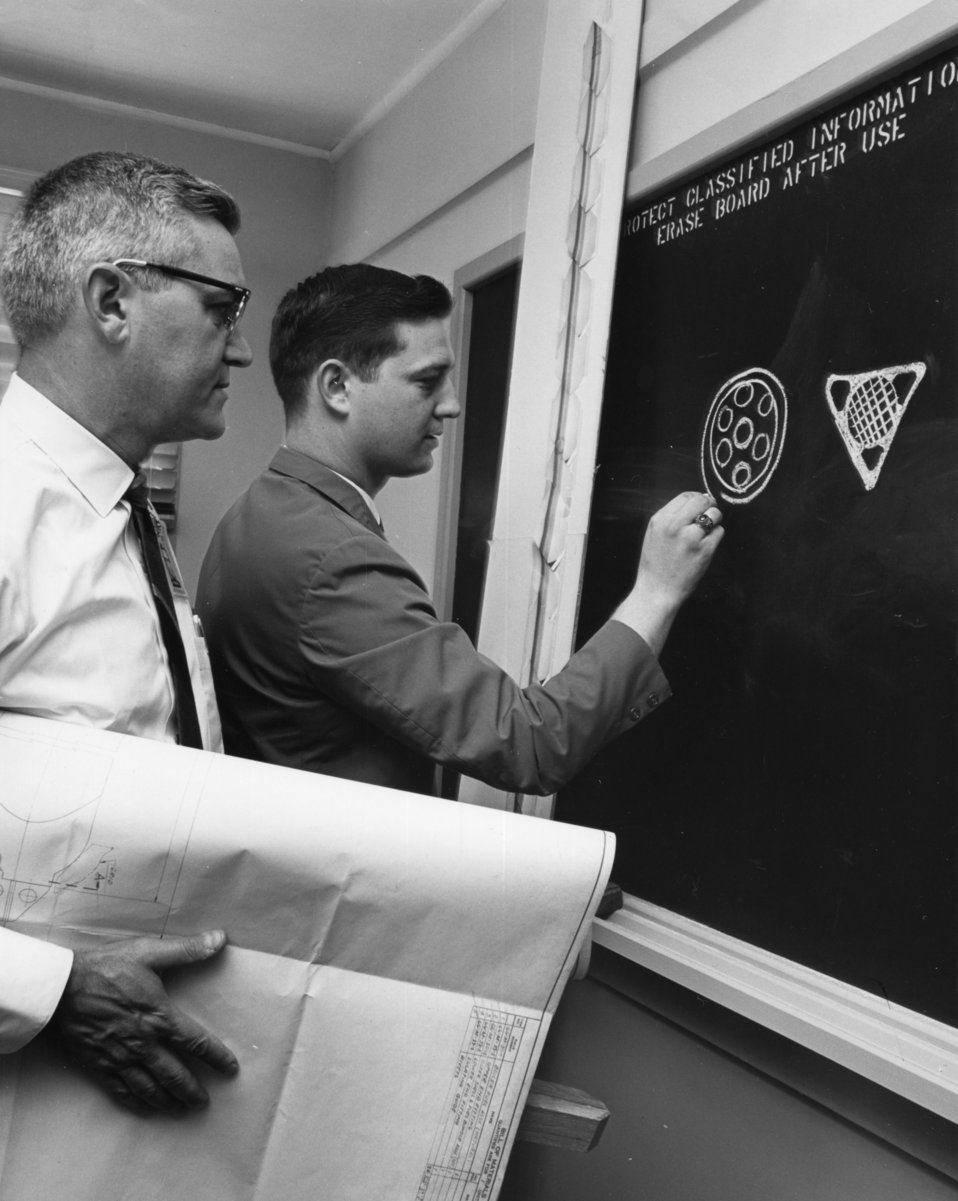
Chalkboard work on Reactor Fuel Element in Oak Ridge

66-0181-2 DOE photo Ed Westcott--- Connor Matthews, B.S. Metallurgy, University of Tennessee, 1963. Now assigned as a Reactor Engineer under Oak Ridge Operations Office's Reactor Division, he is shown with Howard Behrman, Chief, Reactor Technology Branch, evaluating different nuclear reactor fuel elements Oak Ridge Tennessee 1966